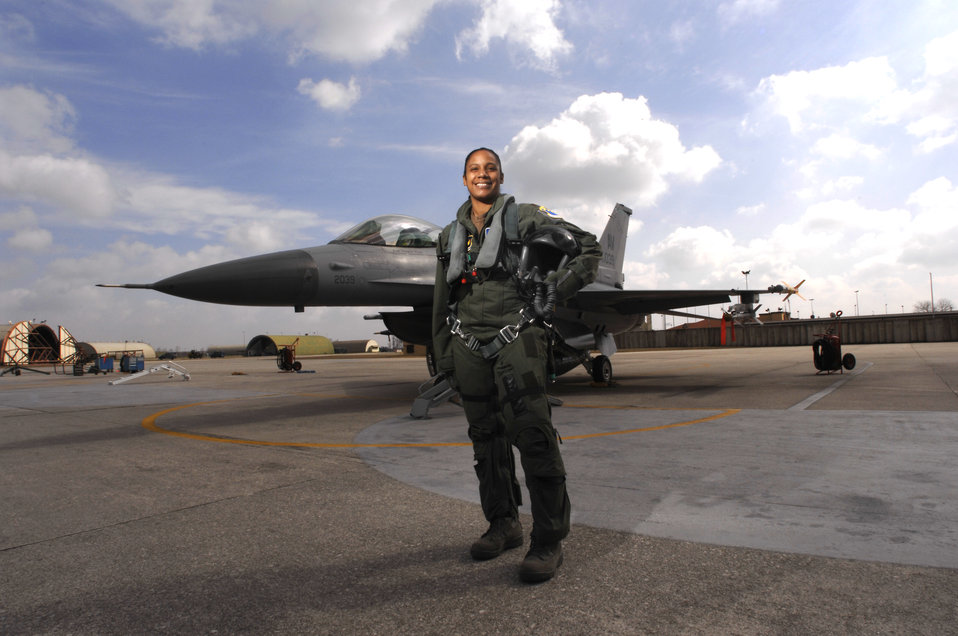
Maj. Shawna Kimbrell, first Air Force black female fighter pilot